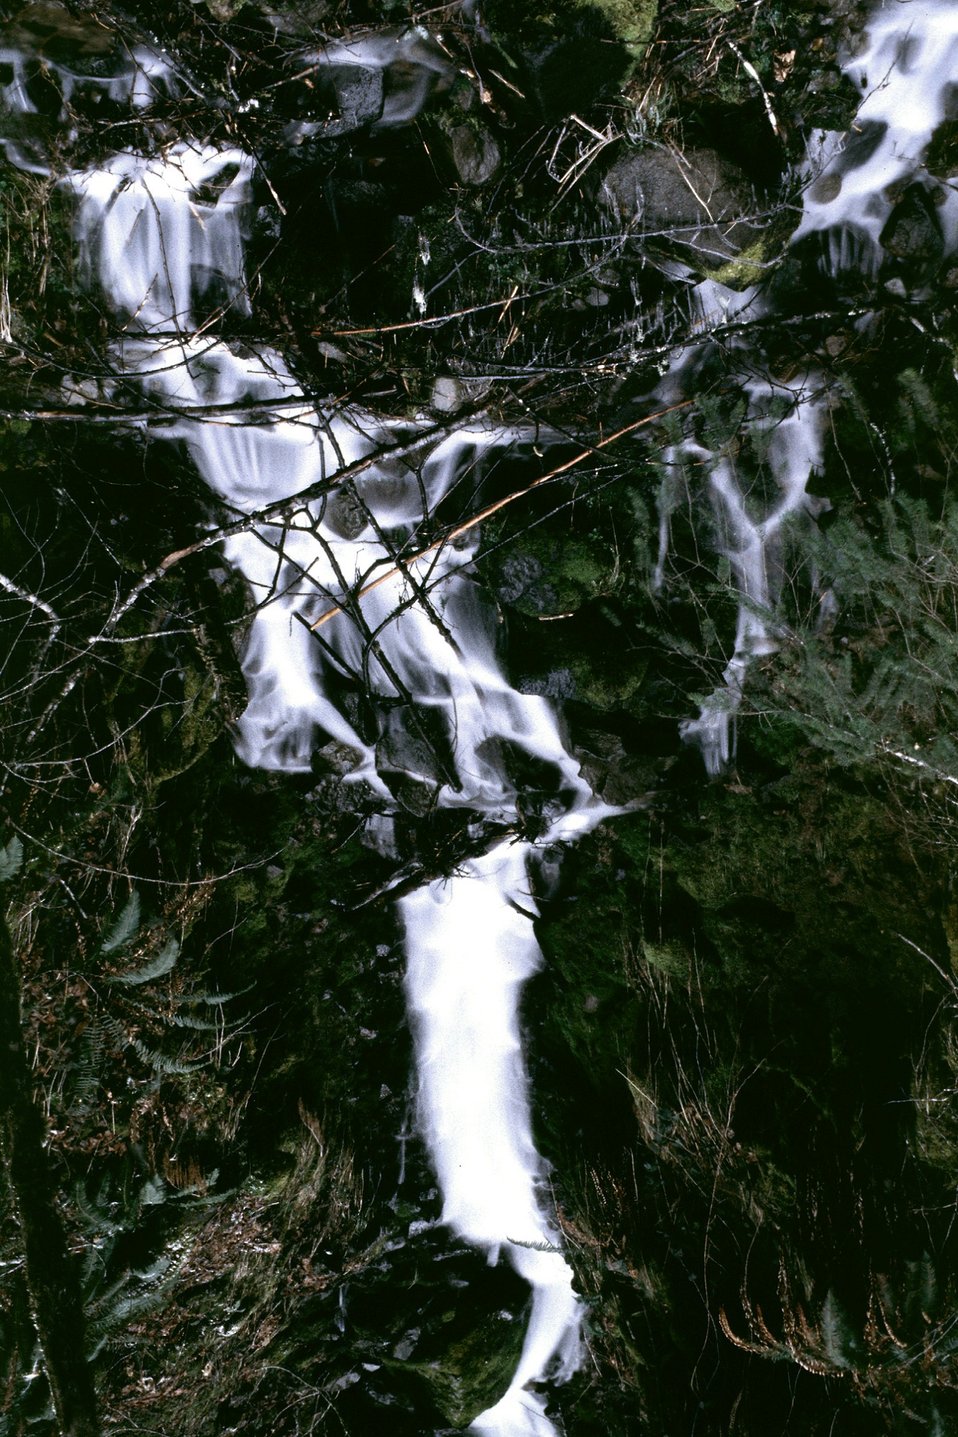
Mid Winter forest scene in the Mollala Corridor.